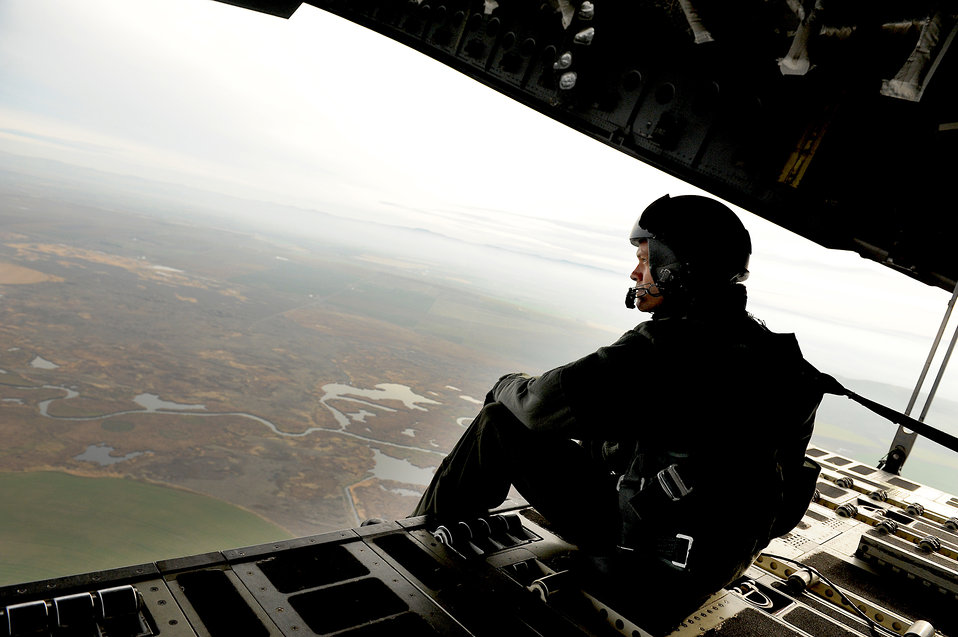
Best seat in the house

Staff Sgt. Jason Jones, 535th Airlift Squadron loadmaster, enjoys the view over Grant County in Washington during a training mission Nov. 13, 2010, from nearby Joint Base Lewis-McChord. The 535th AS aircrew from Joint Base Pearl Harbor-Hickam, Hawaii, trained during a five-day training trip to Washington Nov. 12-17.